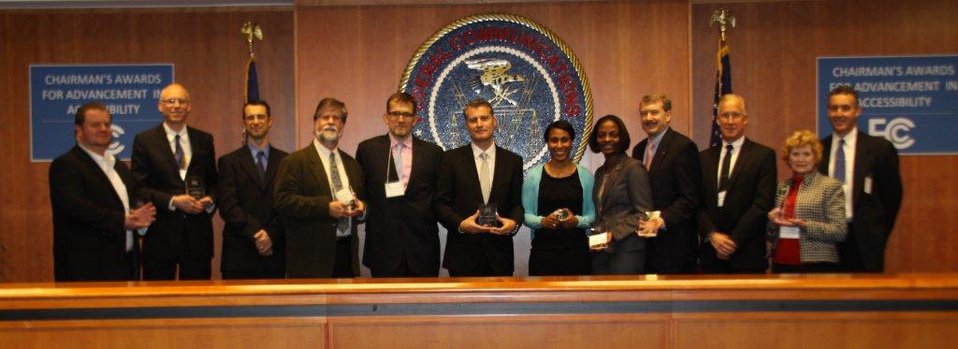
Winners of the 2012 Advancement in Accessibility Awards